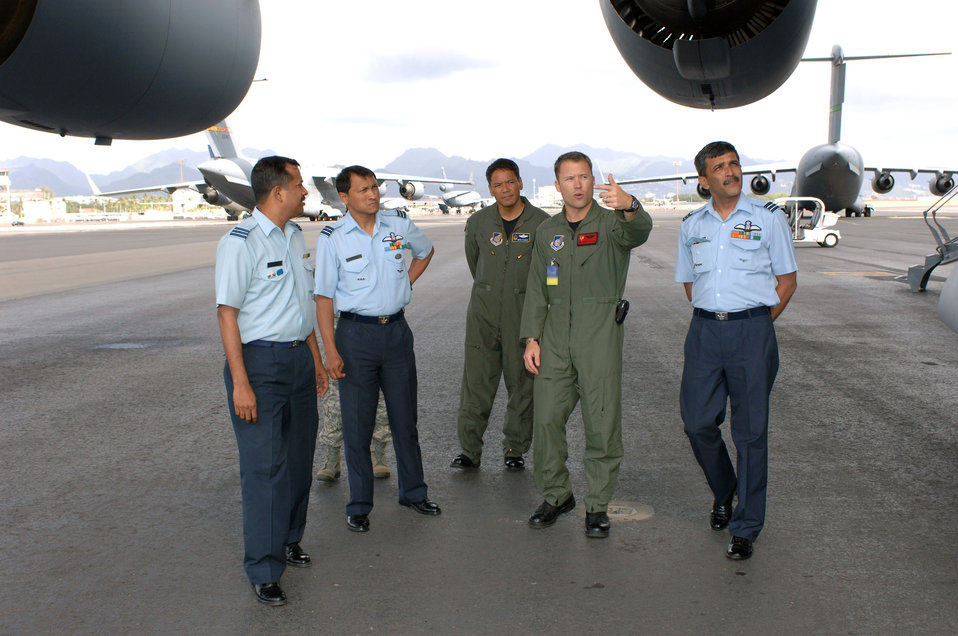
U.S., India strengthen partnership

Lt. Col. Casey Eaton explains the capabilities of the C-17 Globemaster III to Indian air force wing commanders Anup Kumar Dutta, KV Surendran Nair and SK Vidhate during their Feb. 25 visit to Hickam Air Force Base, Hawaii. The 613th Air and Space Operations Center at Hickam AFB hosted the visit Feb. 23 through 27, during which Indian air force officers learned how the United States commands and controls airpower in the Pacific through the 613th AOC. Five 613th AOC members will visit India March 9 through 13 for a similar orientation, as part of a subject-matter expert exchange with the Indian air force. Colonel Eaton is the 535th Airlift Squadron commander.